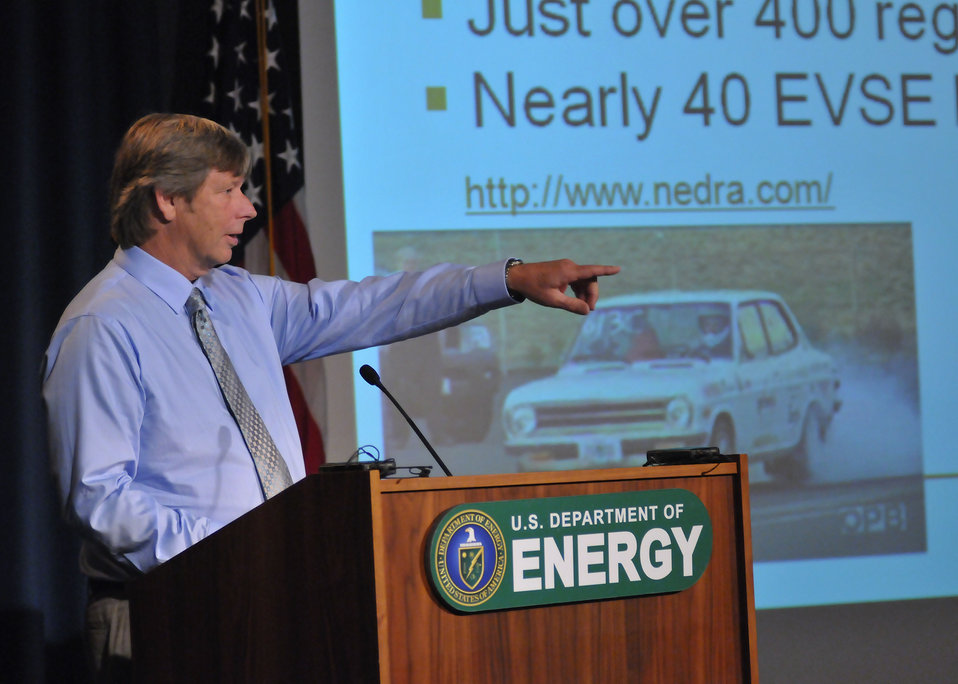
Rick Wallace, State of Oregon